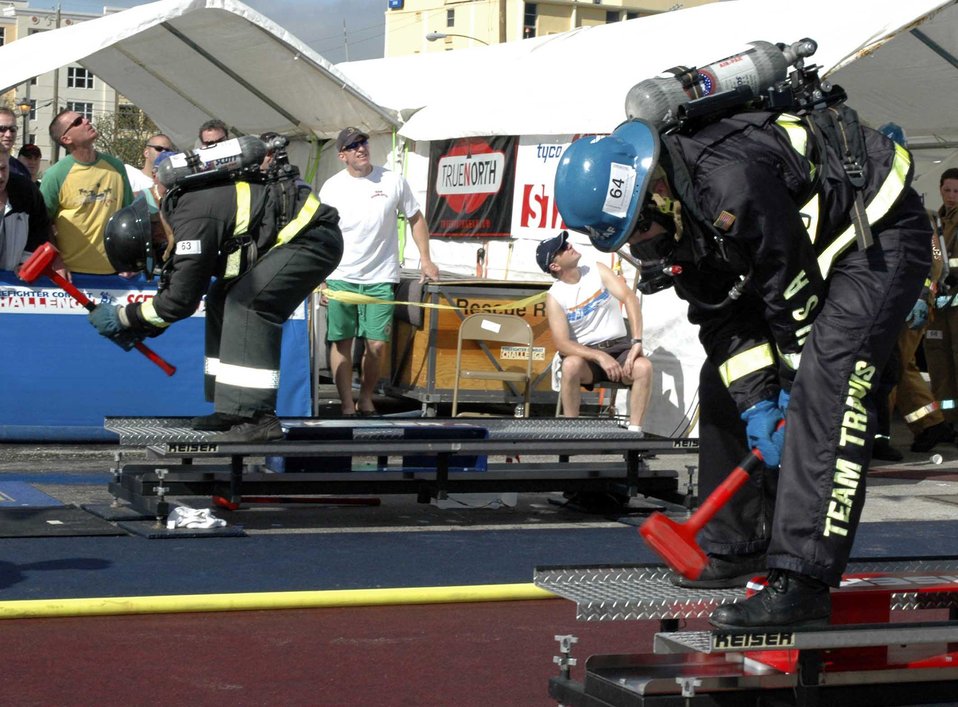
Firefighter challenge

DEERFIELD BEACH, Fla. (AFPN) -- Tech. Sgt. Mike Melton competes against another firefighter on the second day of the World Firefighter Combat Challenge. The competition ends Dec. 3. The Travis Team Firefighters are trying to retain their title as world champions. Sergeant Melton is a firefighter assigned to the 349th Civil Engineer Squadron.